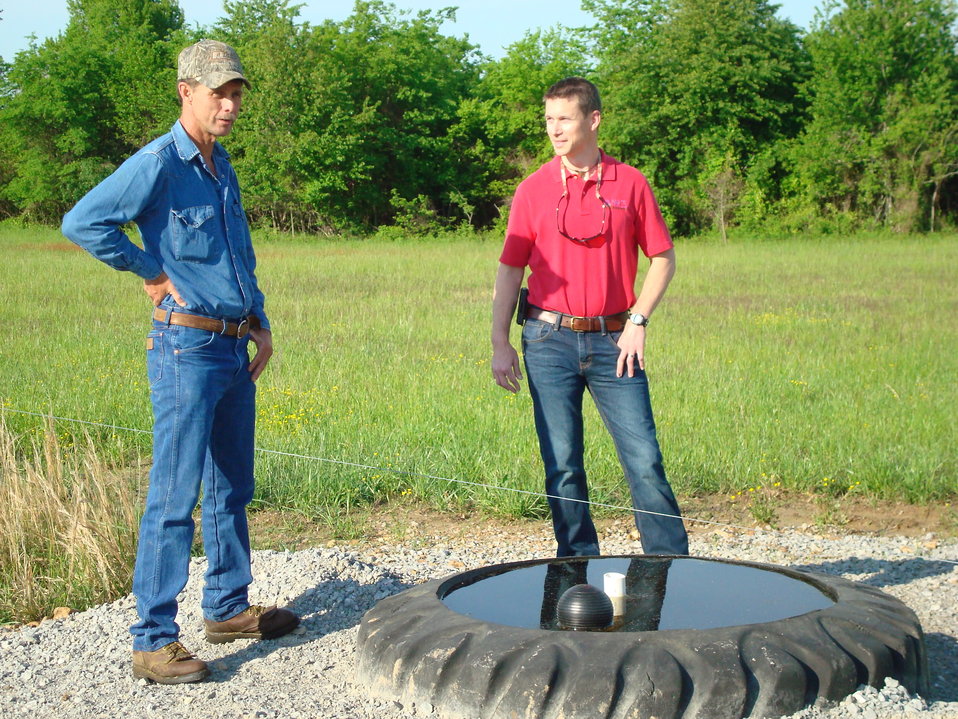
Dale Courtney talks with U.S. Department of Agriculture (USDA) Natural Resource Conservation Service (NRCS) Arkansas Randolph County District Conservationist Adam Eades about the resilience a good prescribed grazing program offers during a drought. With the assistance of USDA’s NRCS, Courtney developed and implemented a conservation plan that included grazing management strategies, which helped to protect his operation from the worst of the drought and make it more efficient. Following the conservation plan, he added electric fence and pipeline to funnel water to new tire tank watering facilities in each of his pastures.